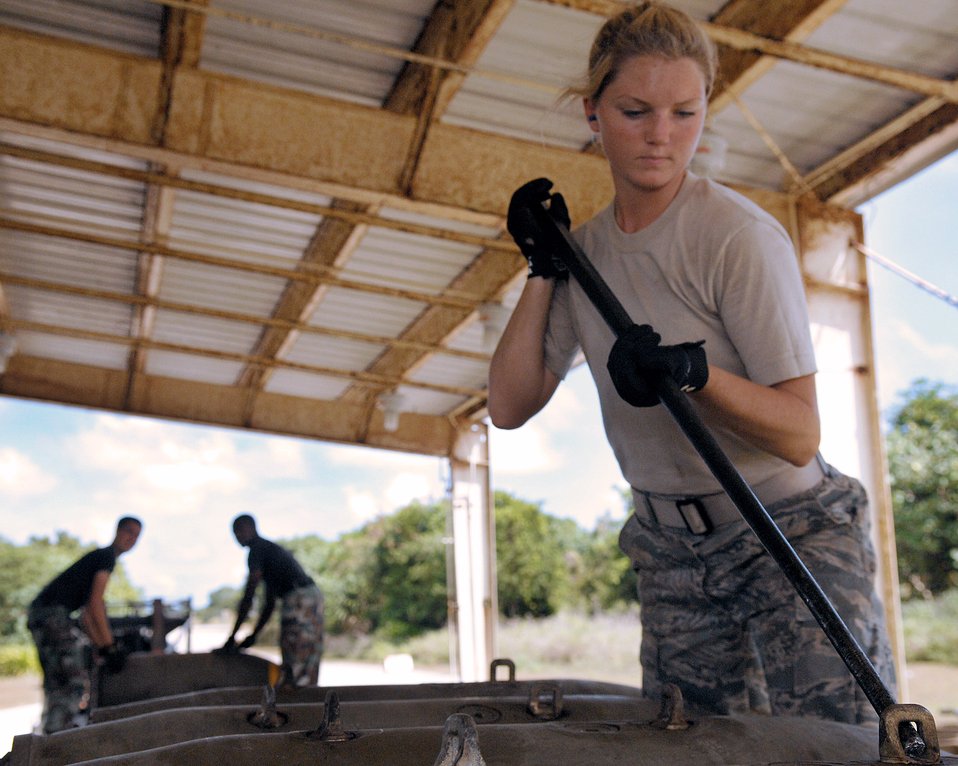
Munitions loaders arm B-52s

Airman First Class Casey Carrano loads several bombs on a truck. Airmen Carrano and the other munitions specialists in the 36th Munitions Squadron at Andersen Air Force Base, Guam, are assembling free-fall, unguided, general purpose 750-pound bombs that will eventually be loaded on a B-52 Stratofortress. In a conventional conflict, the B-52 can carry nuclear or precision-guided conventional ordnance with worldwide precision navigation capability.